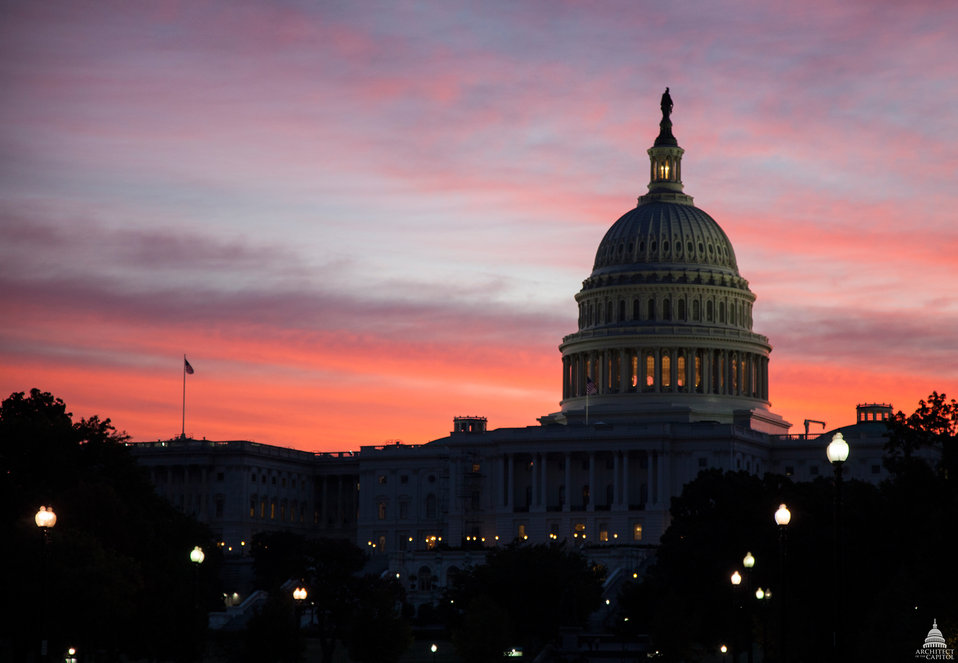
The Capitol at Dawn

Tholos lit and flag over the North Wing of the U.S. Capitol indicates Senate in session on early on September 25, 2013.